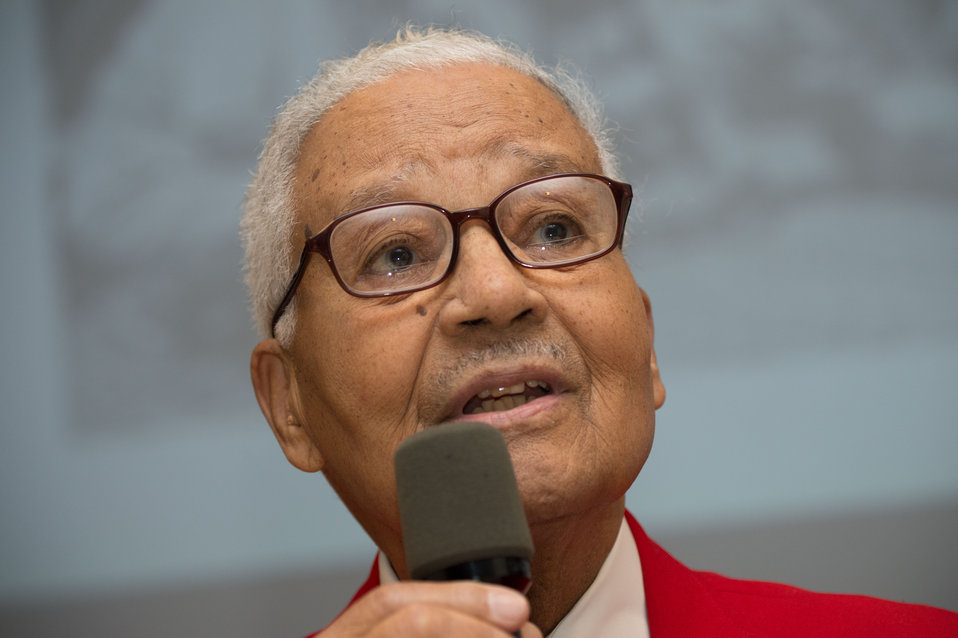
Pilot and Tuskegee Airman, Colonel Charles Edward McGee, U.S. Air Force (USAF) ret. speaks at the U.S. Department of Agriculture's (USDA) Office of the Assistant Secretary for Civil Rights (OASCR) program “In conversation With Tuskegee Airmen”, which honored the airmen’s successes both overseas and at home at USDA in Washington, D.C. on Thursday Mar. 27, 2014. Col. McGee spoke about his experiences in the Army Air Corp (later the Army Air Force and U.S.Air Force). Questions from the audience provided several opportunities for discussion about civil rights challenges and how they achieved success and respect.